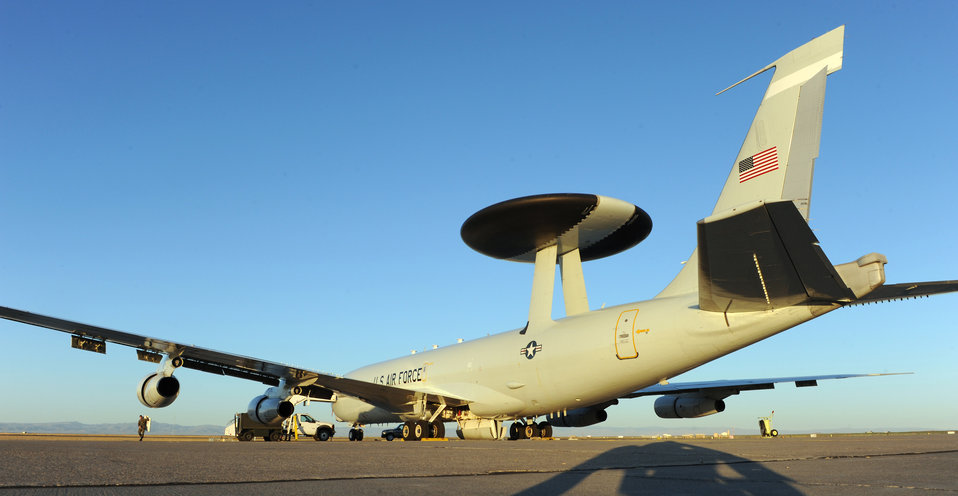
Gunfighter Flag wraps up

An E-3 Sentry AWACS aircraft from the 963rd Airborne Air Control Squadron at Tinker Air Force Base, Okla., sits on the flightline at Mountain Home Air Force Base, Idaho, Sept. 21, 2009, during Gunfighter Flag. The AWACS aircrew participated as friendly